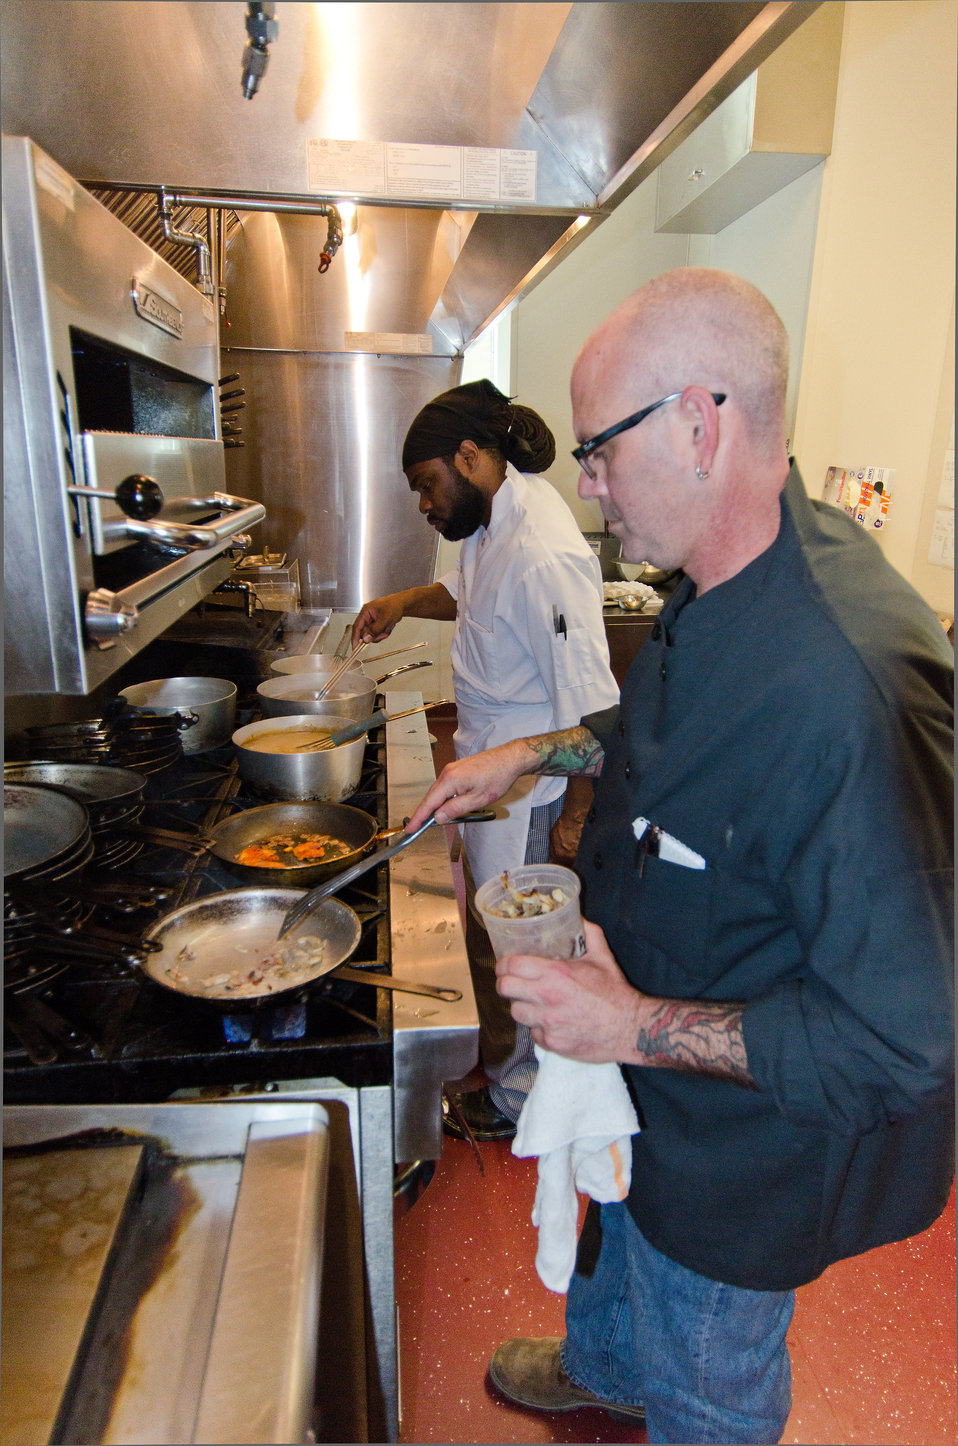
Chef David Rosenthal and Line Cook Jack Jordon prepare ingredients for the lunch service at Inspiration Kitchens in Chicago, Illinois, on Friday June 8, 2012. Inspiration Kitchens, is a social enterprise restaurant of Inspiration Corporation. Inspiration Kitchens prepares contemporary American cuisine prepared and served by students and graduates in their food service training program. The kitchen also offers career services, employment preparation training, tuition subsidies, employer outreach, and job placement and retention services throughout Chicago.